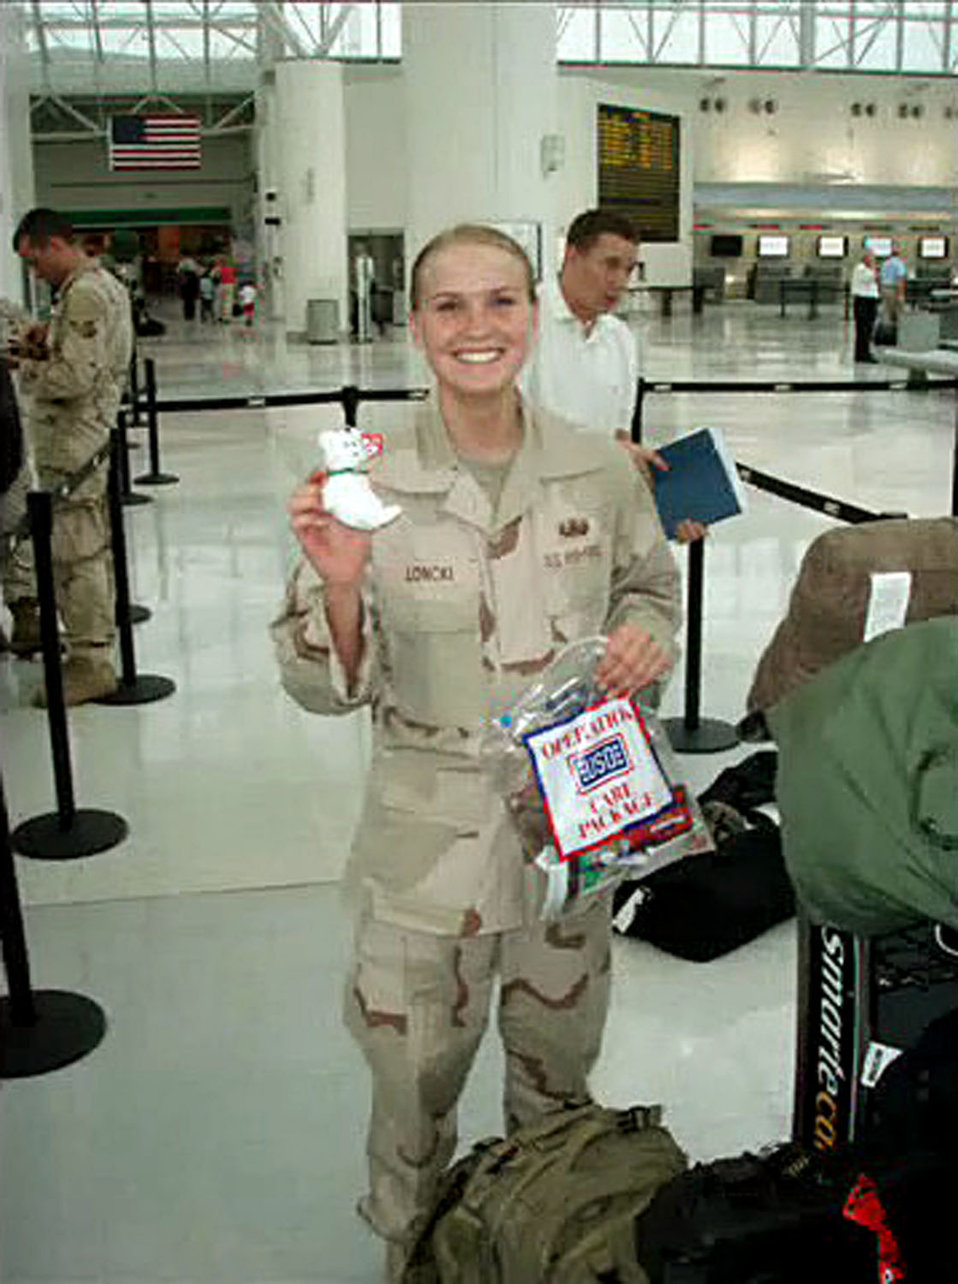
Hill mourns the loss of 3 Airmen

Senior Airman Elizabeth A. Loncki was an explosive ordnance disposal Airman serving in Iraq and was killed defusing a car bomb when it detonated Jan. 7. She was deployed from the 775th Civil Engineer Squadron at Hill Air Force Base, Utah.